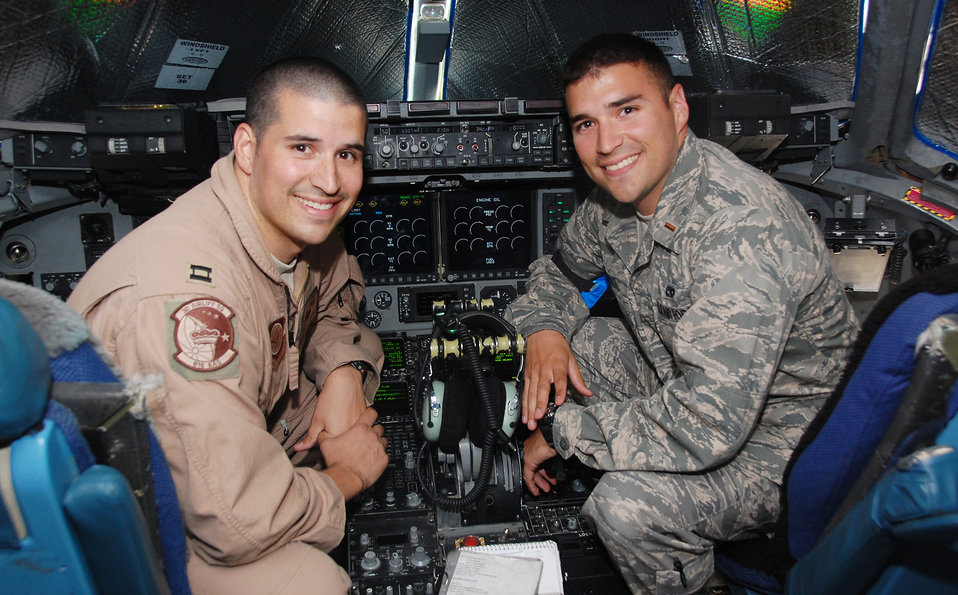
Looking out for big brother

Capt. Bryan Lucero (left) and his younger brother 2nd Lt. Nathan Lucero are deployed together at an air base in Southwest Asia. As an aircraft maintenance officer, it is Lieutenant Lucero's job to ensure his brother's aircaft are fit to fly. Lieutenant Lucero is the 5th Expeditionary Aircraft Maintenance Squadron officer in charge deployed from McChord Air Force Base, Wash., and Captain Lucero is an a 817th Expeditionary Airlift Squadron C-17 Globemaster III pilot deployed from Dover AFB, Del. The brothers hail from Albuquerque, N.M.